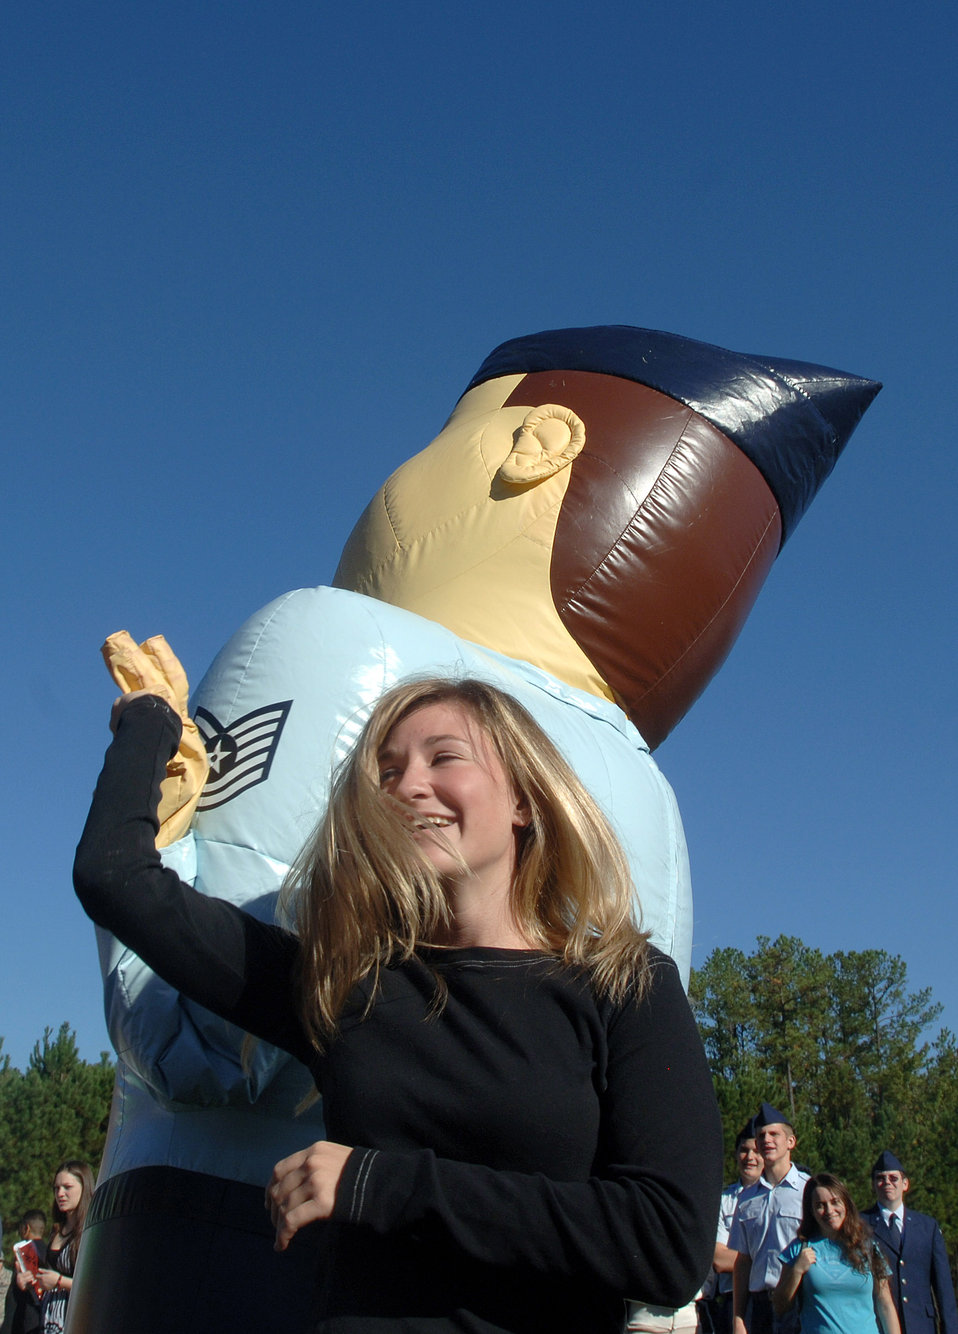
Airmen visit schools as part of Air Force Week Atlanta

Student McKenna Lavery dances with a blown-up Airman mascot Oct. 10 during an Air Force Week Atlanta event at Etowah High School in Woodstock, Ga.